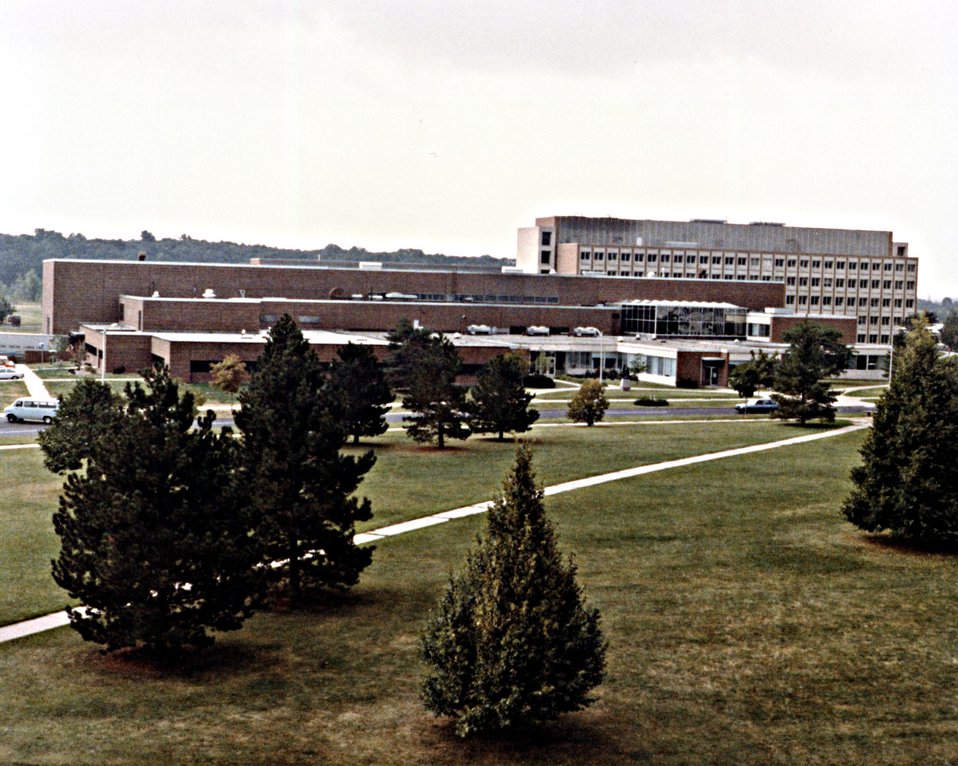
OVERALL VIEW OF THE ENTIRE LABORATORY FACILITY.

THE NATIONAL SUPERCONDUCTING CYCLOTRON LABORATORY IS BEING CONSTRUCTED FOR DOE AT MICHIGAN STATE UNIVERSITY. THE FACILITY IS BASED ON A NEW KIND OF PARTICLE ACCELERATION, THE SUPERCONDUCTING CYCLOTRON, WHICH WILL BE USED TO STUDY THE NUCLEAR REACTIONS BETWEEN 'HEAVY IONS'. USING ULTRA- COLD, SUPERCONDUCTING TECHNOLOGY FOR THE POWER COILS HAS RESULTED IN A COMPACT CYCLOTRON WITH A UNIQUELY HIGH ENERGY GAIN. THE LABORATORY IS AN EXTENSION OF AN EXISTING FACILITY AND WILL PROVIDE A SECOND-STEP SUPERCONDUCTING CYCLOTRON AND ADDITIONAL EXPERIMENTAL AREAS, BEAM TRANSPORT SYSTEMS, RADIATION SHIELDING, AND SUPPORT AREAS.